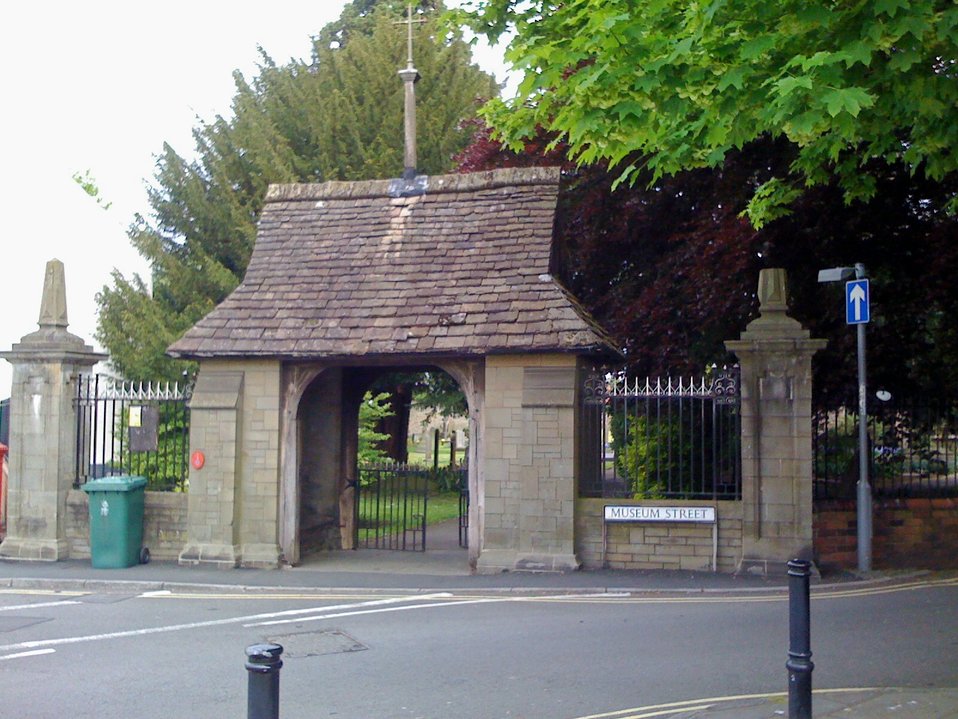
Lych gate, Saint Cadoc's Church, Caerleon
Category:Pictures of Caerleon Category:Pictures of Caerleon